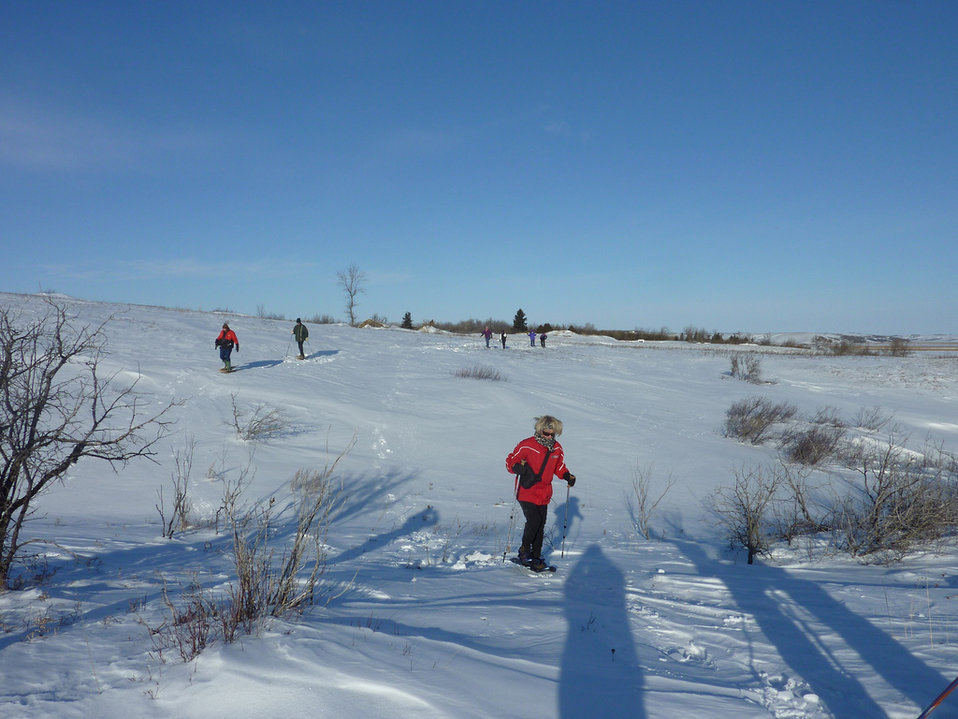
Des Lacs on Snowshoe

Participants in a 2011 'Let's Go Snowshoeing' event at Des Lacs National Wildlife Refuge, ND.